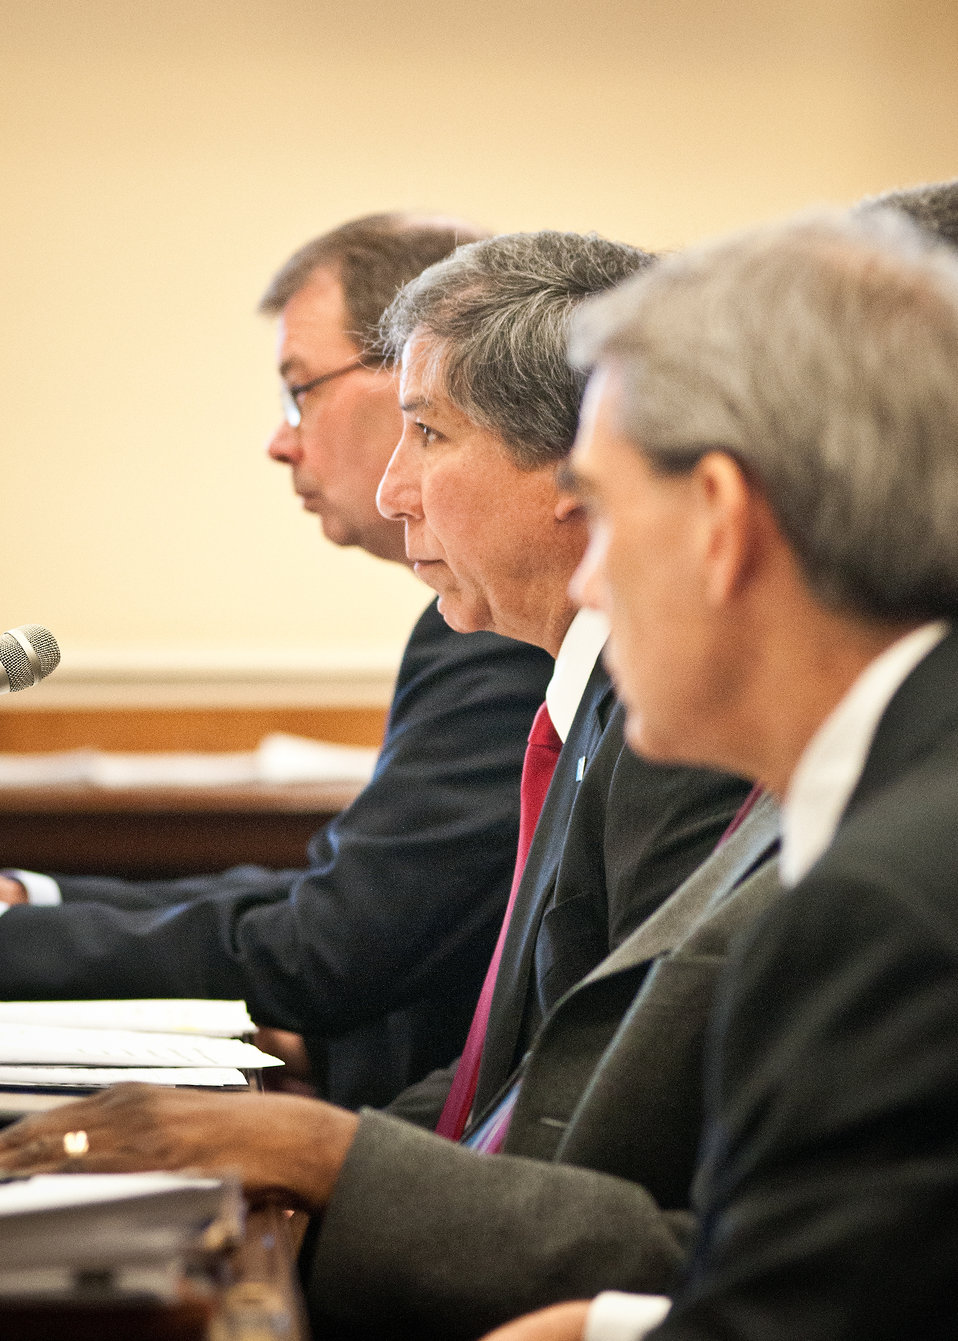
From left: Robert Keeney, Acting Administrator, Agricultural Marketing Service, Ed Avalos, Under Secretary, Marketing and Regulatory Programs and Michael Young, Budget Officer testifying on Capitol Hill before the House Agriculture Appropriations Subcommittee on fiscal year 2013 budget requests for Marketing and Regulatory Programs in Washington, D.C., Tuesday, March 6, 2012.